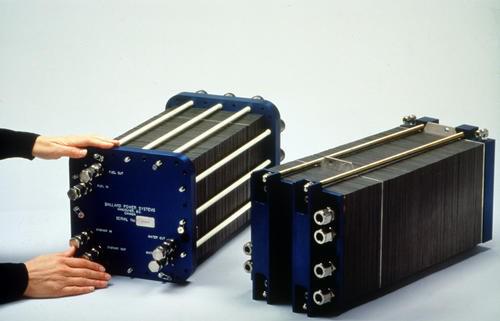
HYDROGEN FUEL CELLS.

FUEL CELLS USE THE CHEMICAL ENERGY OF HYDROGEN AND OXYGEN FROM AIR TO PRODUCE ELECTRICITY WITHOUT COMBUSTION OR POLLUTION. ALTHOUGH, HYDROGEN, THE MOST ABUNDANT ELEMENT ON EARTH, NEVER OCCURS BY ITSELF IN NATURE, IT CAN BE PRODUCED FROM A VARIETY OF DIFFERENT SOURCES. DOE FURTHERS THE TECHNOLOGIES VITAL TO A HYDROGEN ENERGY FUTURE BY RESEARCHING, DEVELOPING AND VALIDATING FUEL CELLS AND HYDROGEN PRODUCTION, AS WELL AS DELIVERY AND STORAGE TECHNOLOGIES FOR TRANSPORTATION AND STATIONARY APPLICATION.